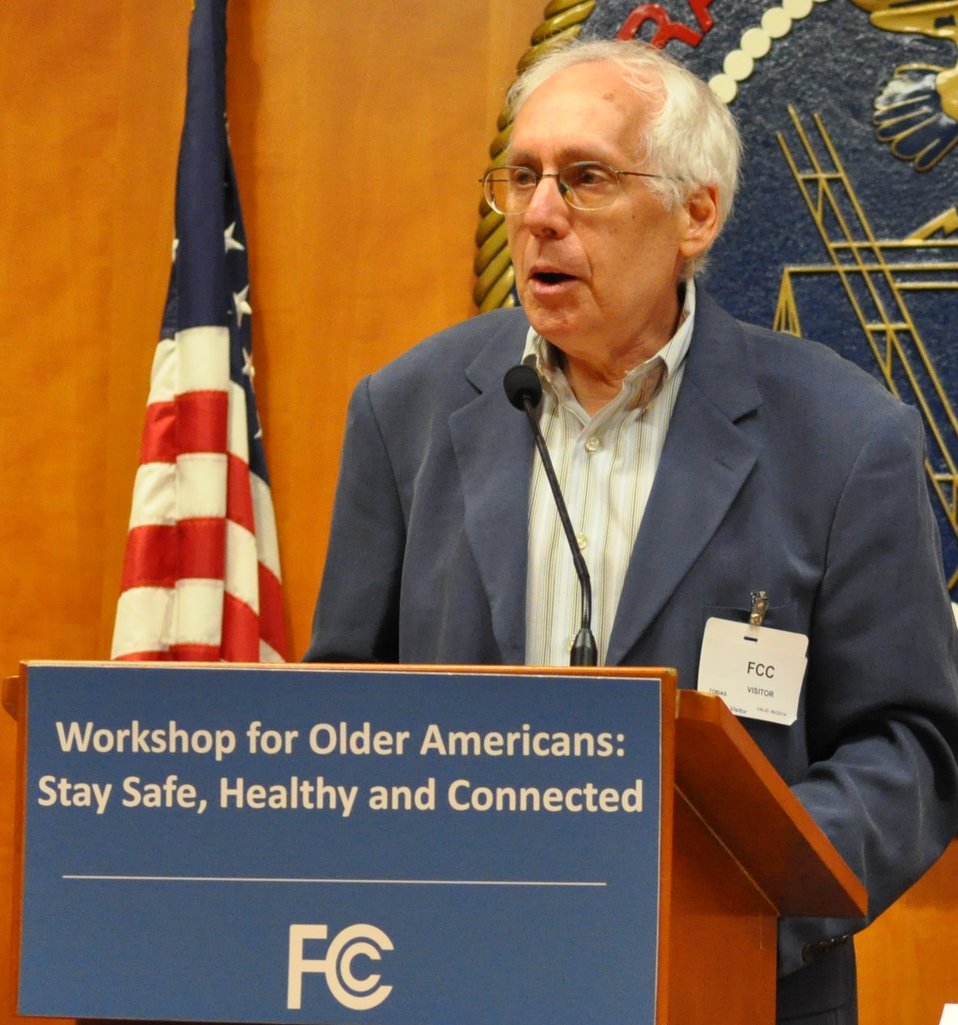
6

Jim Tobias, Director of Stakeholders & Strategies, Raising the Floor